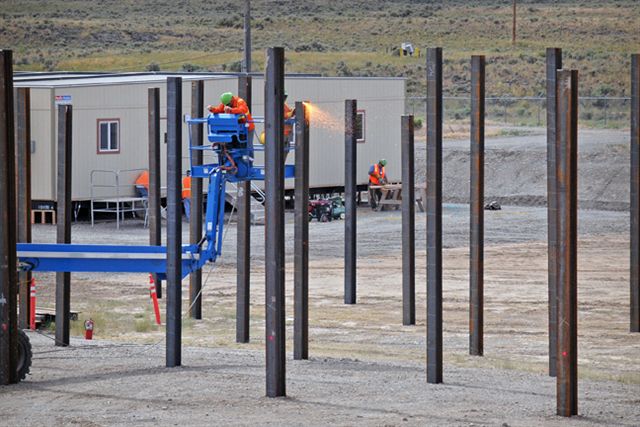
RAN ARP RWMC S127 ARPVII PILINGS 072610 P6558-070 A